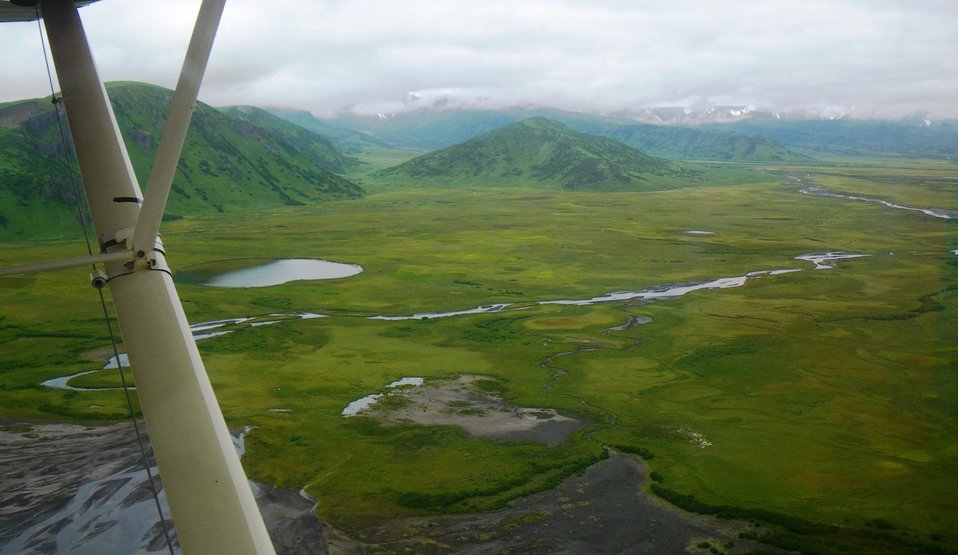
Unimak Landscapes

SE Unimak Island, Alaska Maritime National Wildlife Refuge